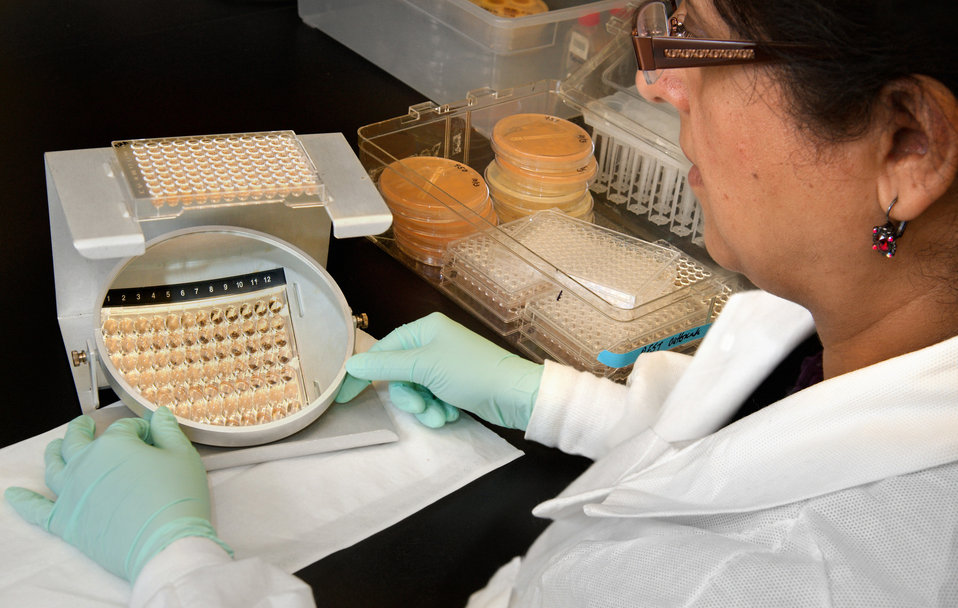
This image shows Centers for Disease Control and Prevention (CDC) scientist Naureen Iqbal reading the results of an antifungal drug susceptibility test during the 2012 multistate fungal meningitis outbreak investigation. See PHIL 15154, for a closer view of the susceptibility test.